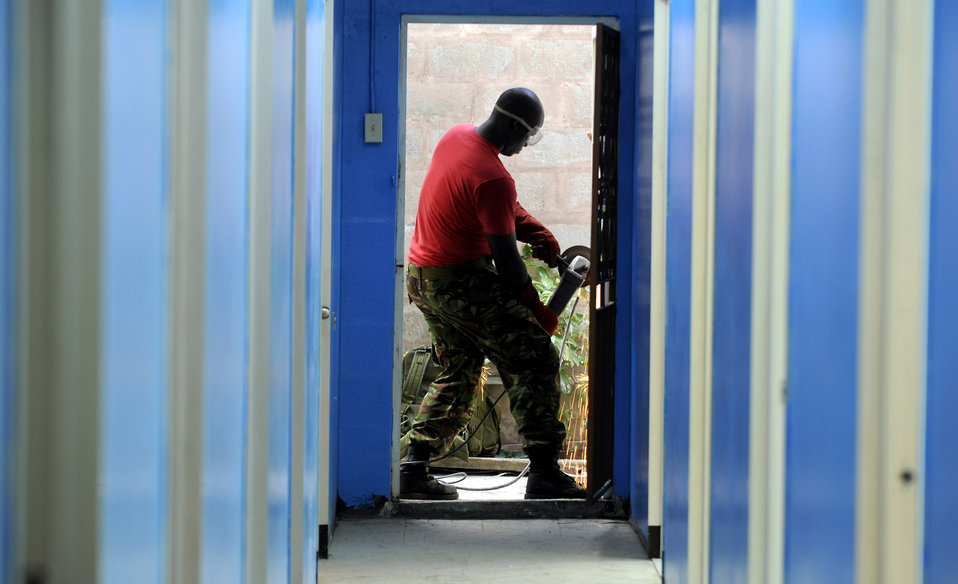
American servicemembers continue to provide promise

A Trinidad and Tobago engineer aids American servicemembers in repairing the St. Jude school in Port of Spain in support of Operation Continuing Promise 2008 Nov. 4 in Port of Spain, Trinidad and Tobago.